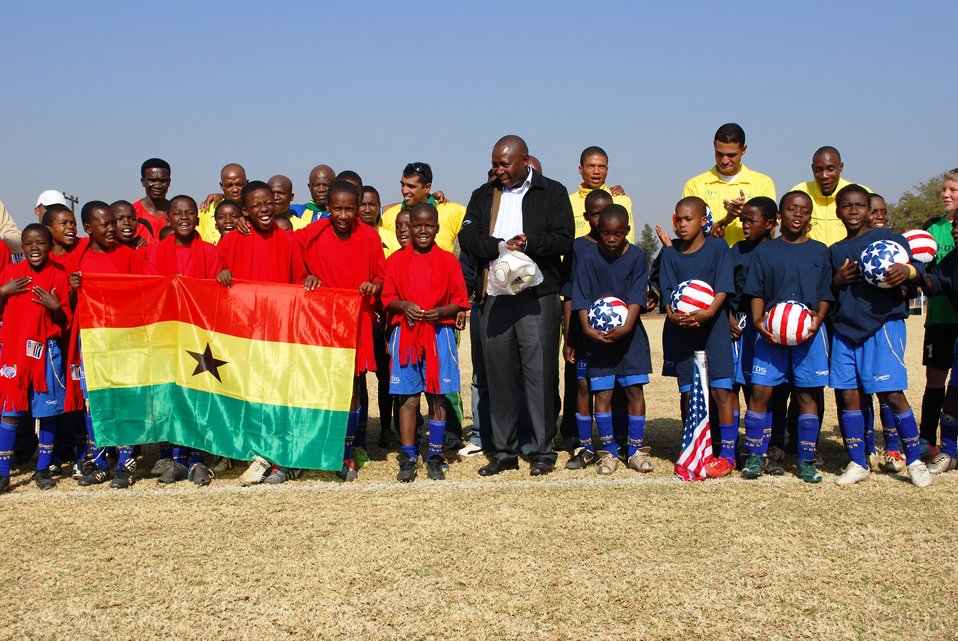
U-11 Bafokeng Football Academy Teams Preview 2010 World Cup Match Between U.S. and Ghana

Two Under-11 Bafokeng Football Academy teams preview the FIFA 2010 World Cup match between the United States and Ghana by playing each other as the “U.S.” and Ghana” on June 25, 2010, in Rustenburg, South Africa. The game highlighted the development of rural soccer in South Africa, particularly in the Royal Bafokeng Nation, which consists of twenty-nine villages located in the Rustenburg Valley in the North West Province.